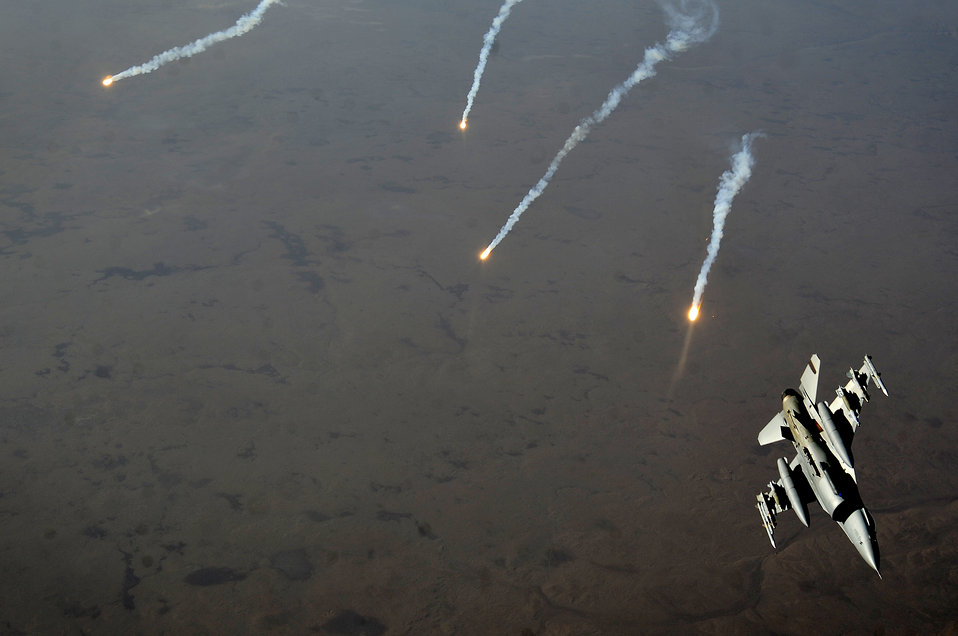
Flight of the falcon

An F-16 Fighting Falcon pitches out while popping flares Nov. 9, 2011, over Iraq.